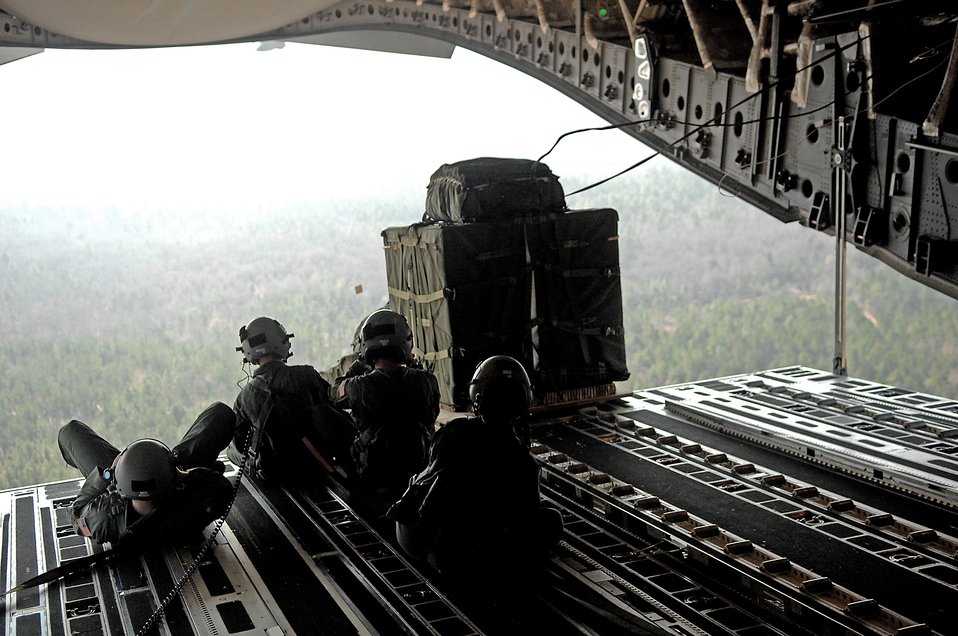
Show of force

C-17 Globemaster IIIs from the 437th and 315th airlift wings drop cargo at a remote airfield during a strategic brigade airdrop exercise involving a 13-ship formation Dec. 18 from Charleston Air Force Base, S.C. C-17s must be able to meet the Army's goal of airdropping a brigade's worth of troops and equipment (about 3,250 Soldiers and 3,450 tons of equipment). Charleston AFB aircraft currently account for half of the Air Force strategic brigade airdrop requirement.